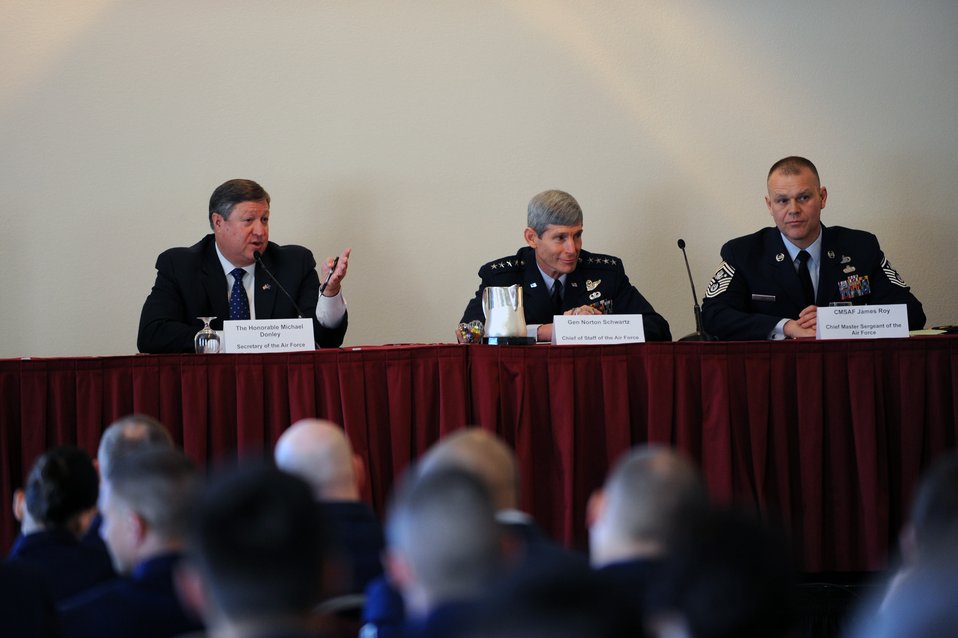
Chief master sergeant of the Air Force shares vision for enlisted Airmen

Air Force Secretary Michael Donley, Air Force Chief of Staff Norton Schwartz and Chief Master Sgt. of the Air Force James A. Roy answer questions with the junior force during the Air Force Association's Air Warfare Symposium and Technology Exposition Feb. 18, 2010, at the Rosen Shingle Creek Hotel in Orlando, Fla. The symposium will runs through Feb. 19.